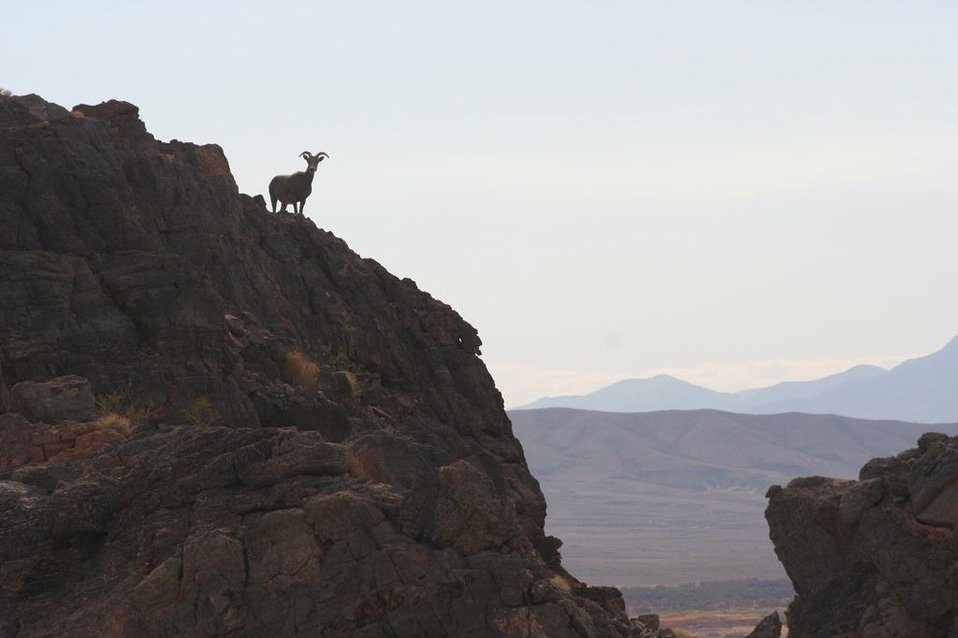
Bighorn sheep on Point of Rocks

A female bighorn sheep watches hikers pass by from Point of Rocks on Ash Meadows National Wildlife Refuge, west of Las Vegas.